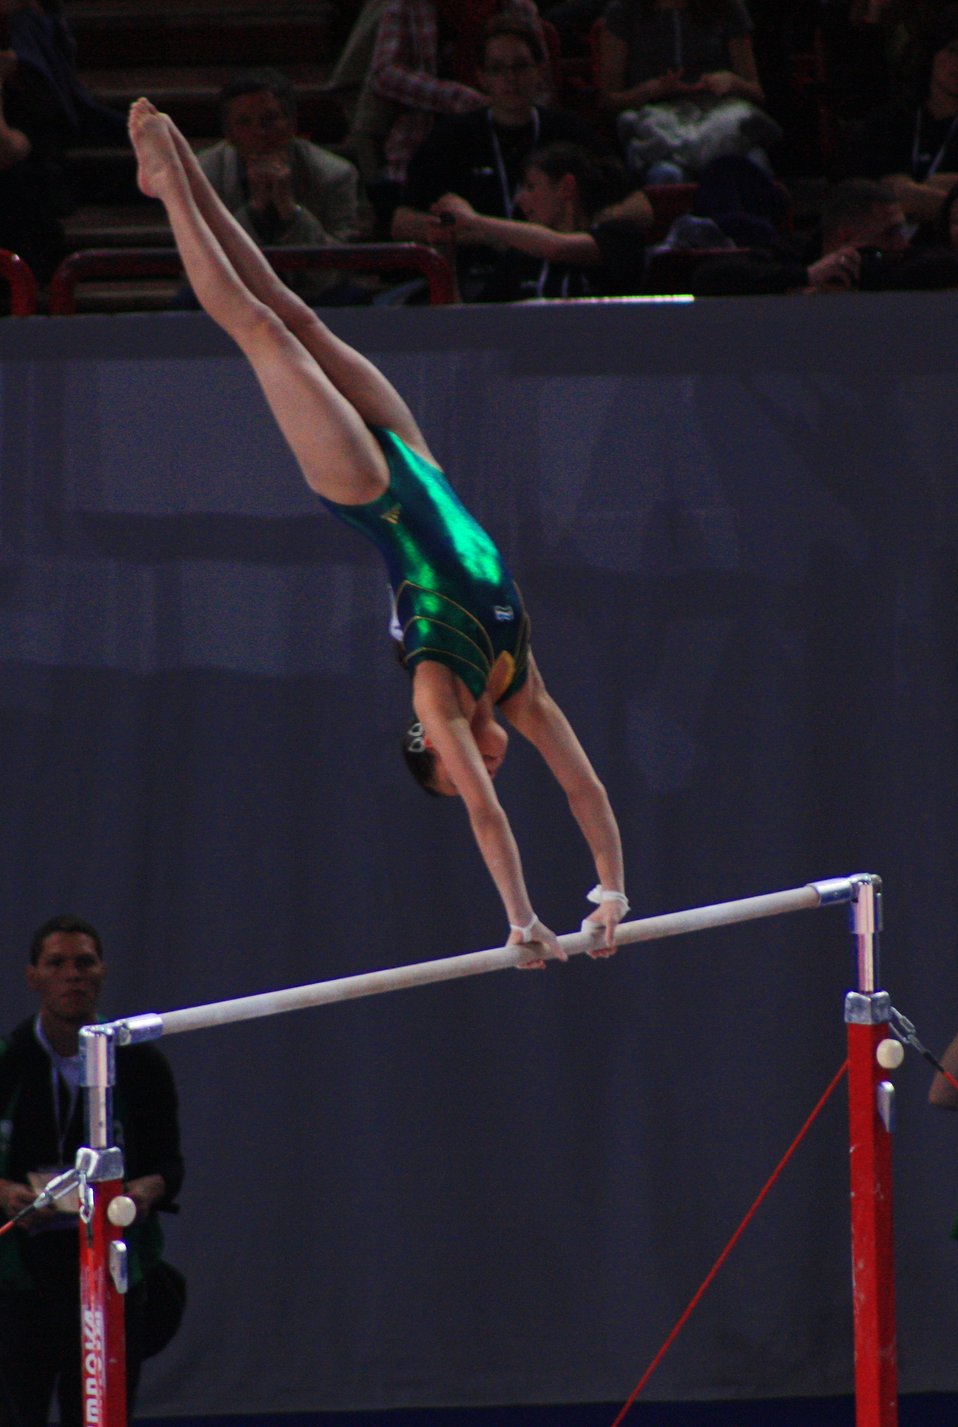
Fran√ßais†: Asal Saparbaeva lors des qualifications des barres asym√©triques aux 17e Internationaux de France, en 2010.